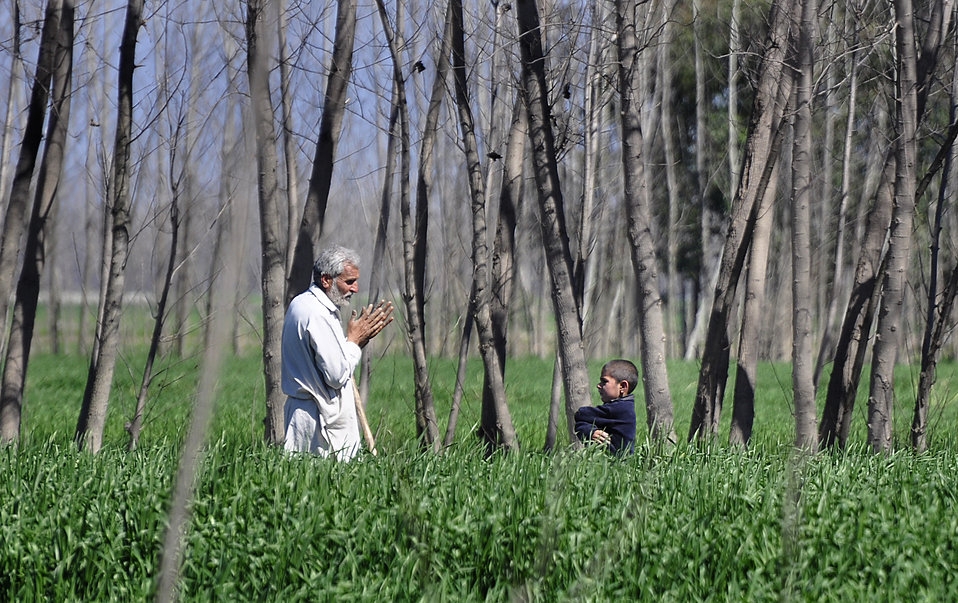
2011 March: USAID's Agricultural Recovery Program in 22 districts of Khyber Pakhtunkhwa, Punjab and Balochistan is an excellent example of the impact US development assistance can have. We have helped more than 500,000 farmers salvage the winter planting season and livestock after the floods. As a result, wheat farmers have nearly doubled their harvests. More than 5 million people have benefited. These photos show progress of the USAID Agricultural Recovery Project in Khyber Pakhtunkhwa.